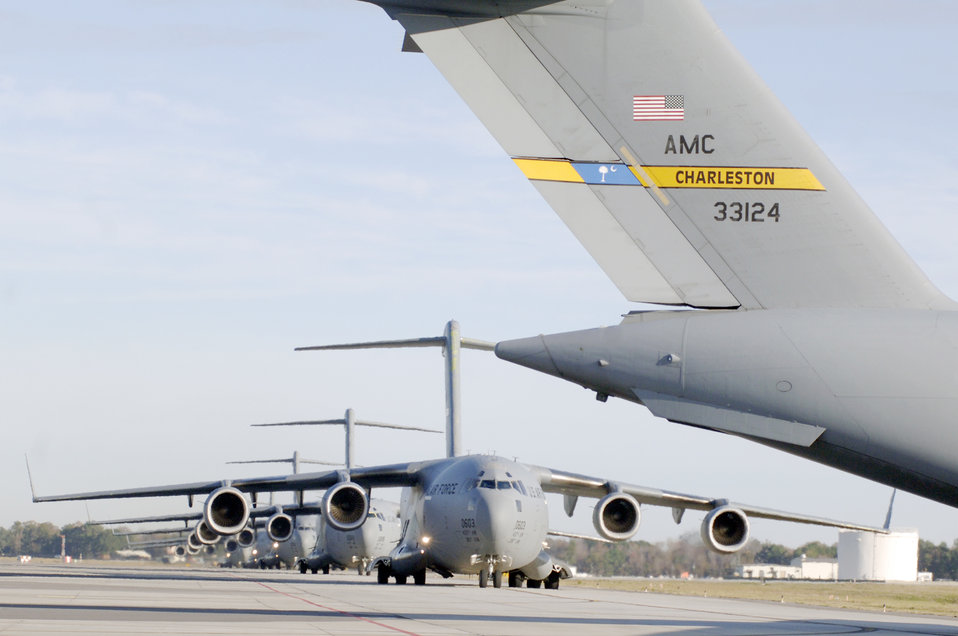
Airmen, Soldiers participate in Operation Thunderstruck

C-17 Globemaster IIIs from Charleston Air Force Base, S.C., taxi prior to take-off in preparation for a strategic brigade airdrop exercise over North Auxiliary Airfield Dec. 16, 2009, near North, S.C. Charleston AFB Airmen conducted a large formation exercise utilizing 10 C-17 aircraft. Soldiers from the 2-319th Airborne Field Artillery, 82nd Airborne Division, Ft. Bragg, N.C., were airdropped along with cargo pallets to simulate the seizure of a remote airfield.